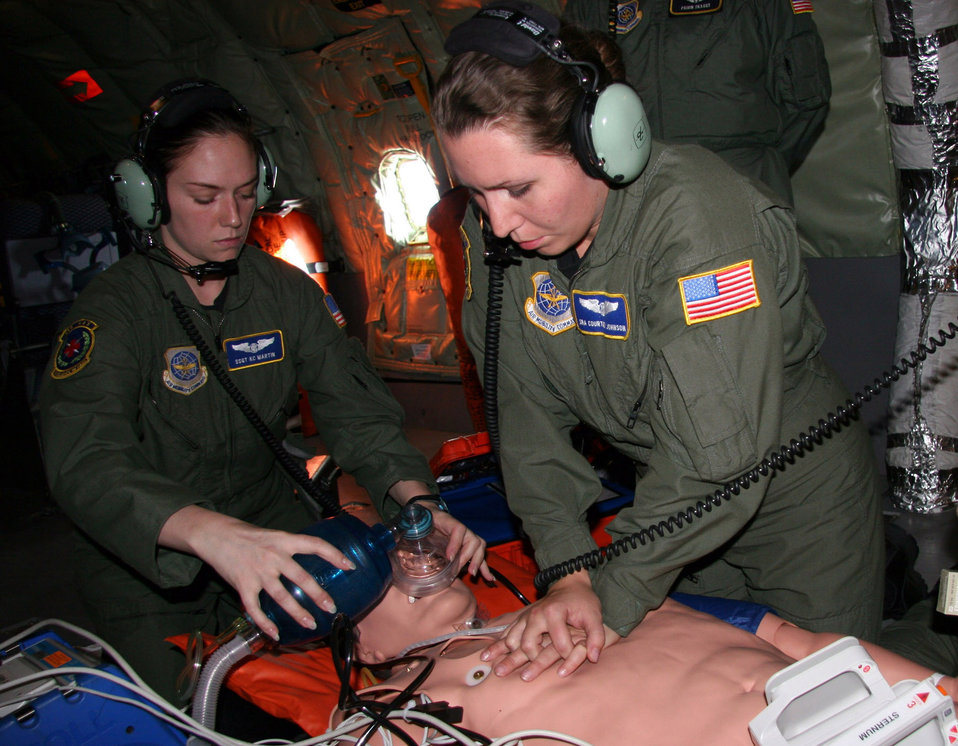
Medevac training

OVER THE PACIFIC OCEAN (AFPN) -- Medical technicians Staff Sgt. K.C. Martin (left) and Senior Airman Courtney Johnson practice their advanced cardiac life support skills on a dummy. The training took place aboard a KC-135 Stratotanker aircraft leaving Marine Corps Base Kaneohe Bay, Hawaii. Sergeant Martin and Airman Johnson are with the 349th Aeromedical Evacuation Squadron at Travis Air Force Base, Calif. They took part in three days of training at the Marine base. The tanker is from the Reserve's 939th Air Refueling Wing at Portland International Airport, Ore.